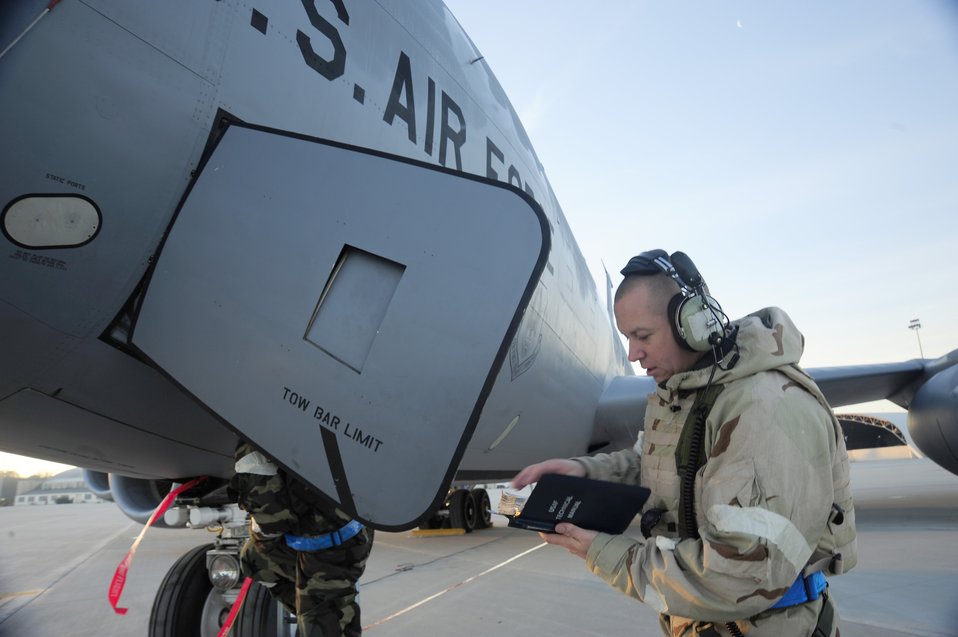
KC-135 Stratotanker maintenance

Staff Sgt. David Peralta reviews a technical order before conducting required maintenance on a KC-135 Stratotanker Jan 27, 2011, during an operational readiness inspection at the Savannah Combat Readiness Training Center in Savannah, Ga. Sergeant Peralta is assigned to the 112th Aircraft Maintenance Squadron.